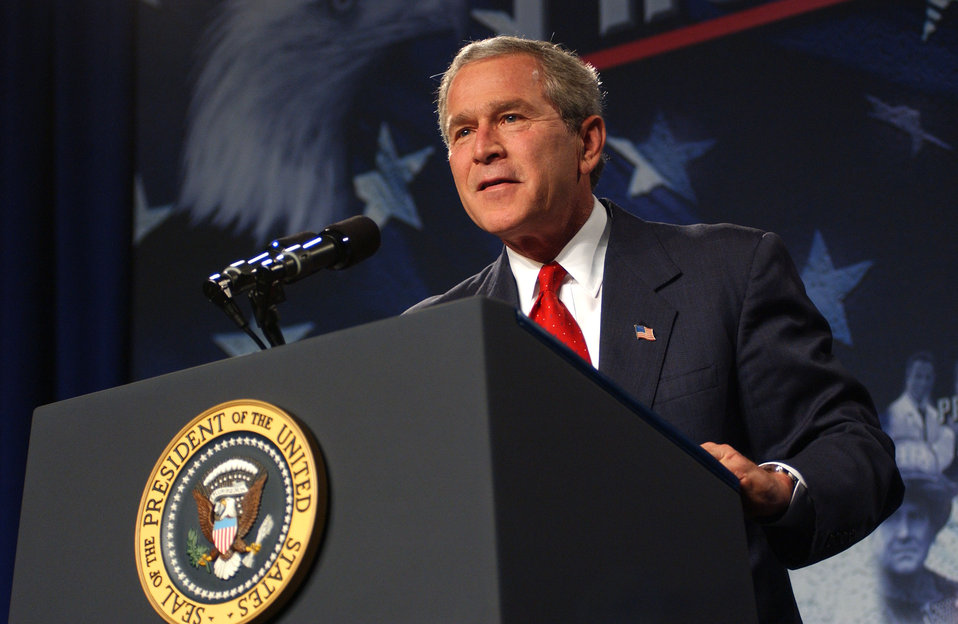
President George W. Bush visit to Oak Ridge National Lab.

04-164-297 DOE photo by Lynn Freeny

President George W. Bush visit to Oak Ridge National Lab. Oak Ridge Tennessee 7-12-2004